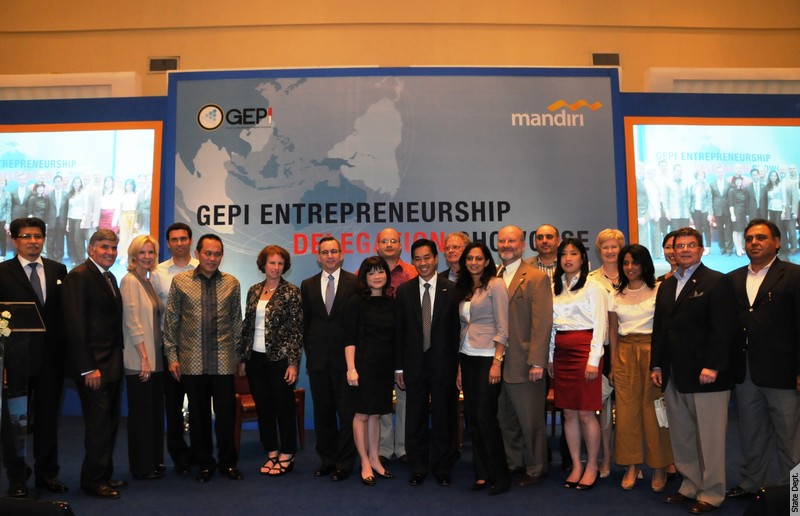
The Global Entrepreneurship Program Indonesia and U.S. Embassy Welcome Entrepreneurship Delegation

The Global Entrepreneurship Program Indonesia (GEPI) and the U.S. Embassy in Jakarta, Indonesia, welcome an Entrepreneurship Delegation of 12 leading American entrepreneurs, innovators and investors visiting Indonesia on July 19, 2011.